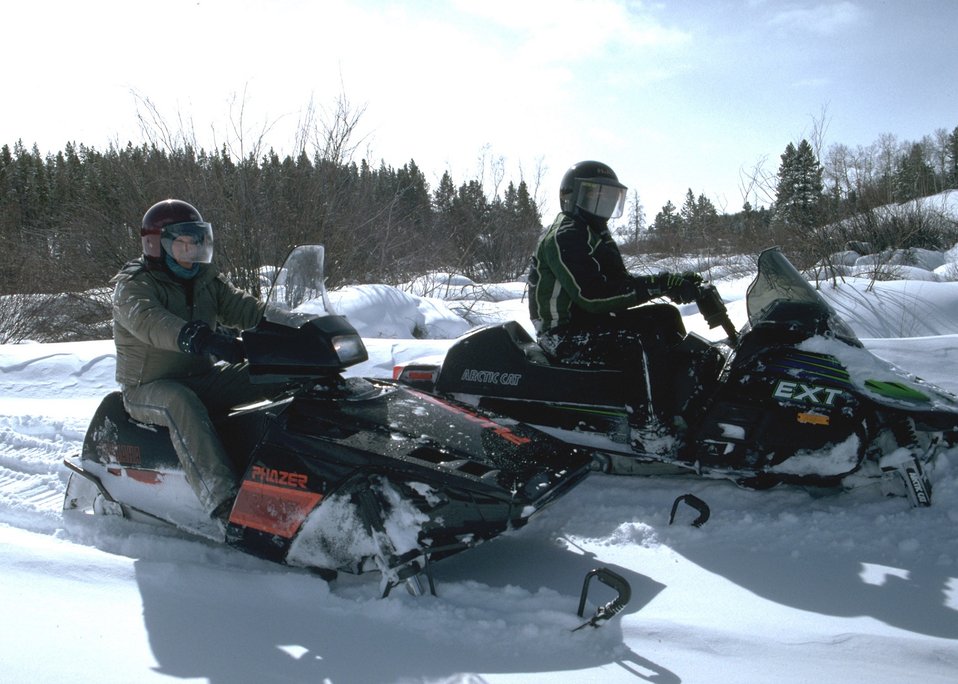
Snowmobiling on a mountain site.